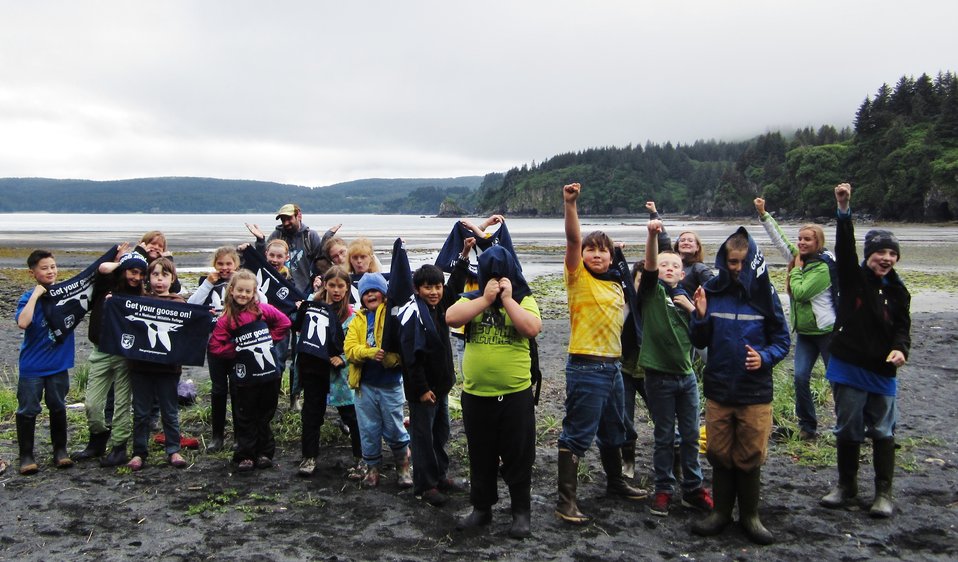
Get Your Goose On! - Alaska Style

Kodiak Refuge Summer and Science Art Camp. Campers: McKenna Donohue, Bailey Mullen, Solomon Himelbloom, Tymber Bashem, Gage Johnson, Dominic Conol, Anastasia Gauthier, Abigail Groncki, Ashley Cowin, Leslie Spear, Brayden Pfister, Myah Morrison, Dylan Morrison, Olivia Young, Samantha Burnside, Tito Sabangan, Ava Pruitt, Greyson Lincoln. USFWS staff/volunteers: Kristen Riesberg, Ali Sutton, Rory Psotka and Kari Eschenbacher.

Credit: Kari Eschenbacher / USFWS

The Kodiak National Wildlife Refuge is a United States National Wildlife Refuge in the Kodiak Archipelago in southwestern Alaska, United States.

The Kodiak National Wildlife Refuge includes the southwestern two-thirds of Kodiak Island, Uganik Island, the Red Peaks area of Afognak Island and all of Ban Island in the archipelago. It encompasses 1,990,418 acres (8,054.94 km2).[2] The refuge is administered from offices in Kodiak.

The refuge contains seven major rivers and about 100 streams. It is a spawning ground for all six species of Pacific Ocean salmon, trout and several other fish species, as well as a nesting ground for 250 species of bird, many of which feed on salmon. The refuge has only six native species of mammals: Kodiak brown bear, red fox, river otter, ermine, little brown bat and tundra vole. The non-native mammals Sitka deer, mountain goat, Roosevelt elk, snowshoe hare and beaver were introduced to the archipelago between the 1920s and 1950s and are now hunted and trapped.

The climate of the refuge is that of southern Alaska, mild and rainy. Many areas in the refuge are densely forested with Sitka Spruce at lower elevations. There are grasslands in drier areas and at higher elevations. The refuge contains several small glaciers.